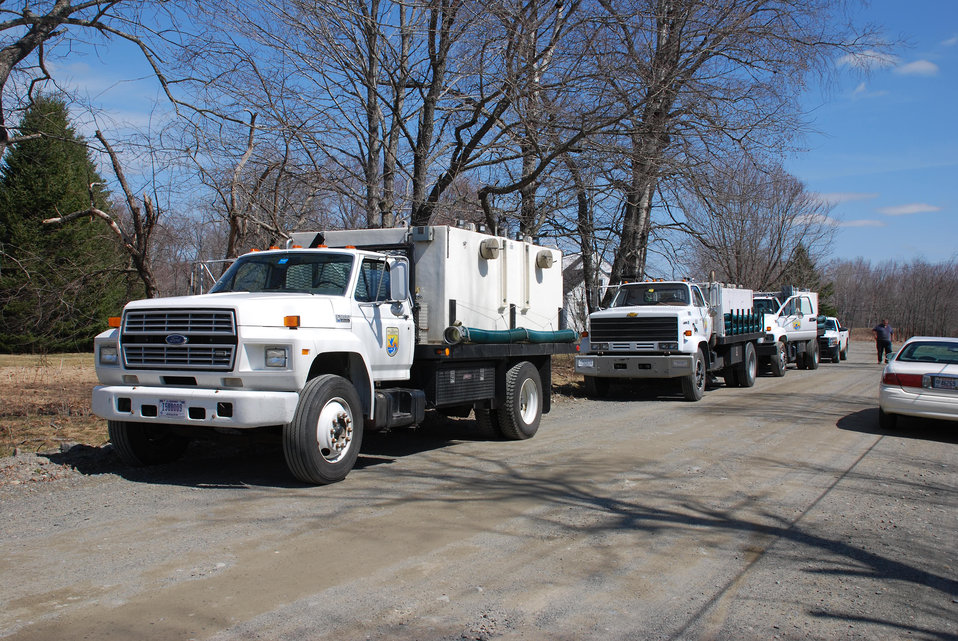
Release Site, Pleasant River

Fleet of four trucks at the stocking site on the Pleasant River in Milo, Maine.